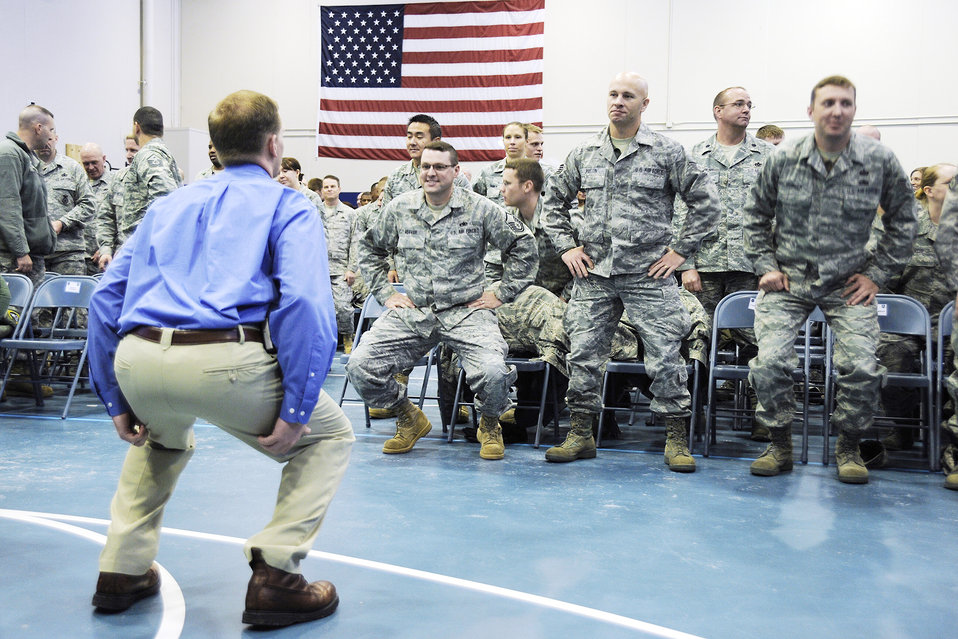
Schriever Wingman Day

Kevin Ball, exercise physiologist, leads 50th Space Wing attendees in stretching just before presenting his fitness briefing during the Wingman Day Dec. 9, 2009, at Schriever Air Force Base, Colo. Wingman Day is an Air Force-wide program that was established to strengthen the morale and welfare of Air Force units.